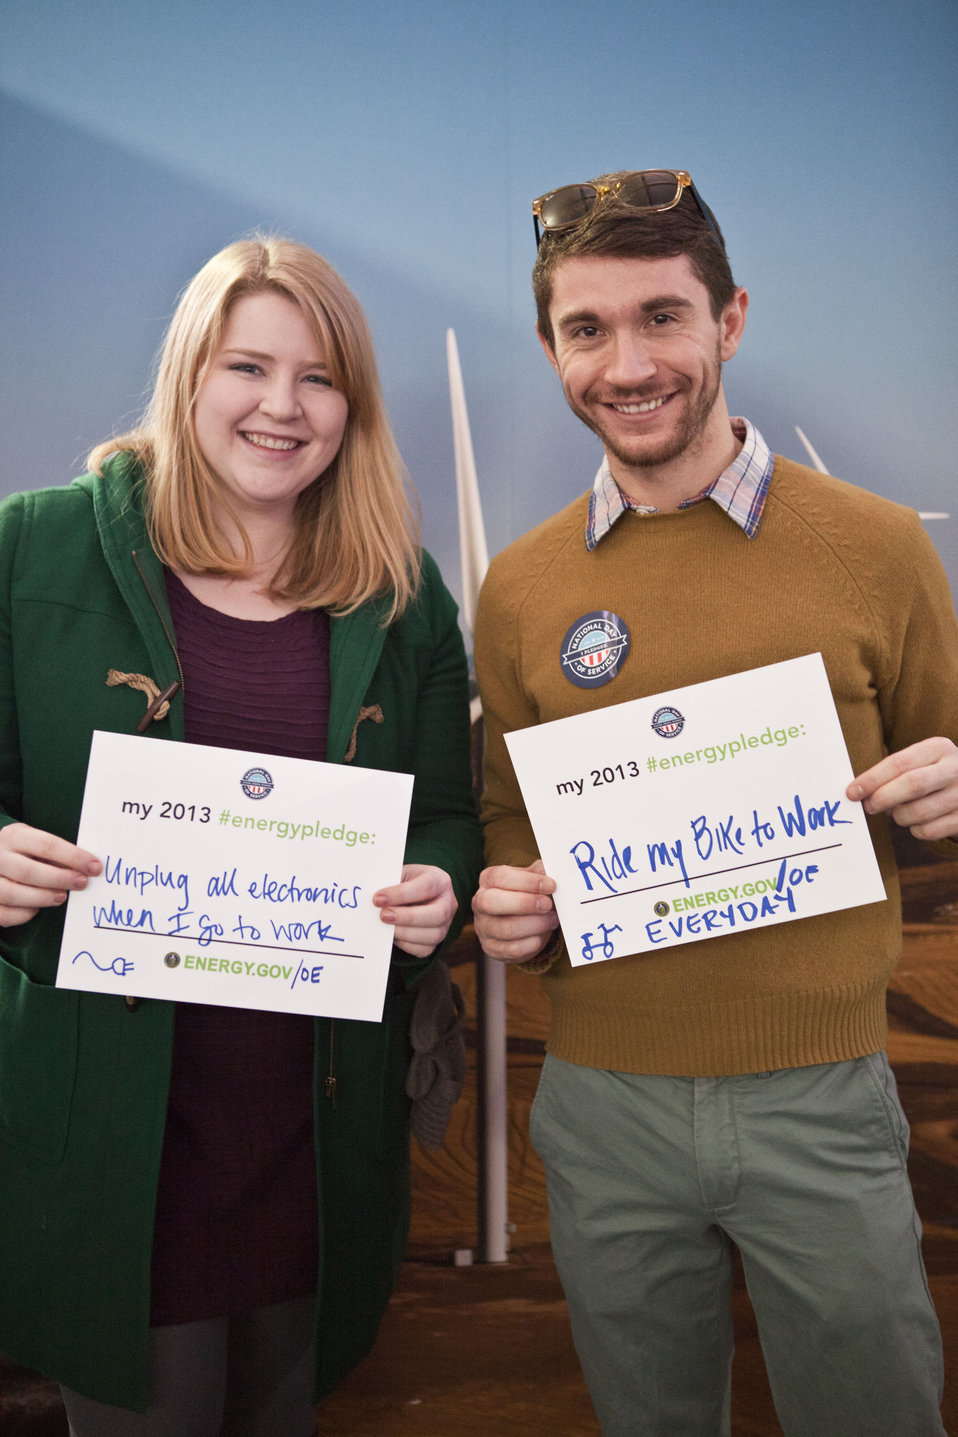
What's your #energypledge?